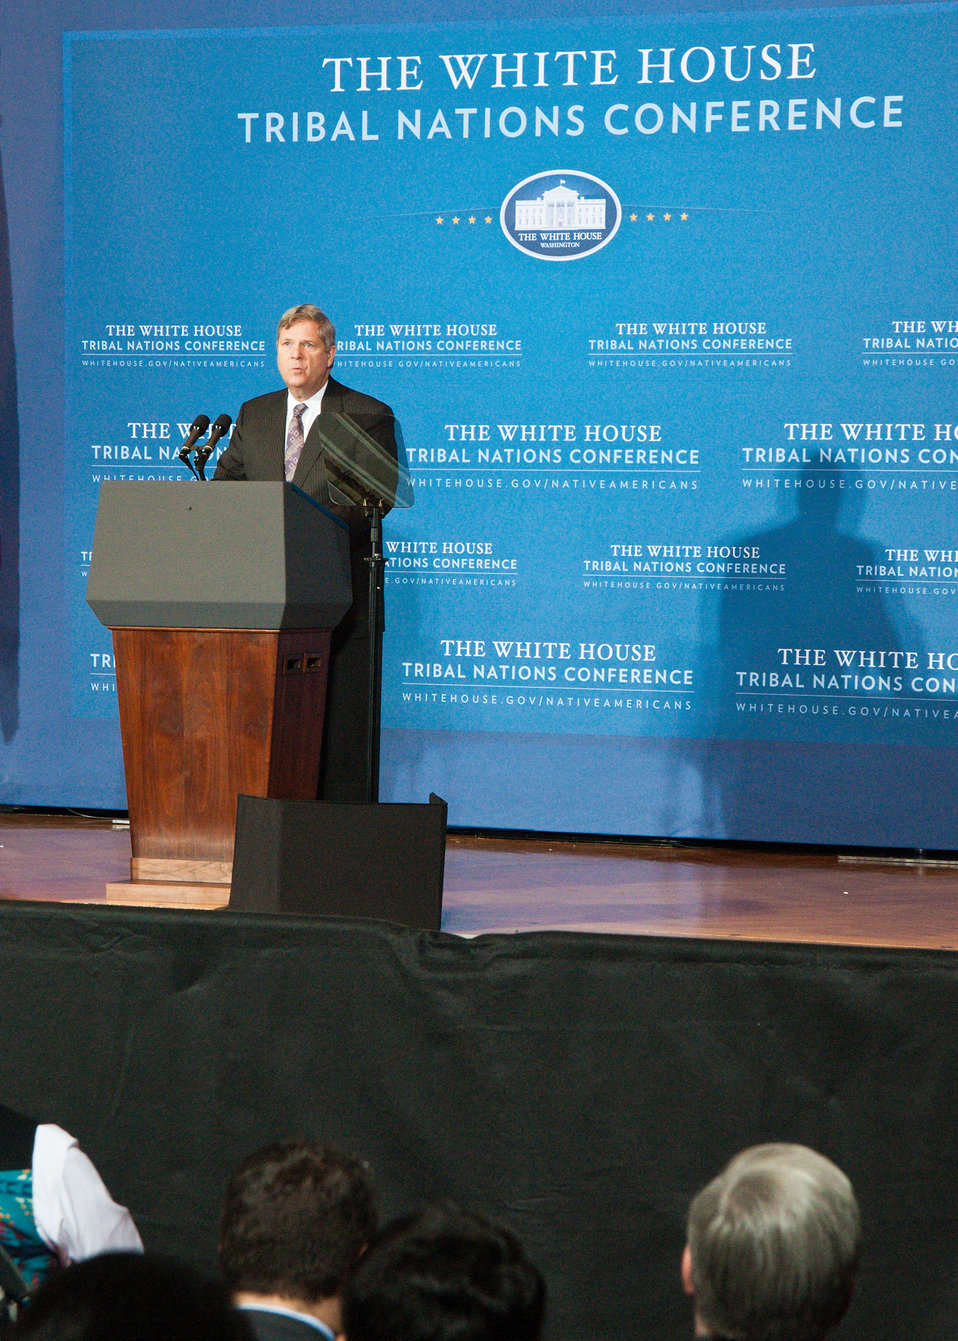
Agriculture Secretary Tom Vilsack speaks at the Fourth Annual White House Tribal Nations Conference at the U.S. Department of Interior in Washington D.C. on Wednesday, Dec. 5, 2012. Cabinet members Interior Secretary Ken Salazar, Agriculture Secretary Tom Vilsack, Education Secretary Arne Duncan, Treasury Deputy Secretary Neal Wolin, Commerce Acting Secretary Rebecca Blank, Health and Human Services Secretary Kathleen Sebelius discussed the gains and progress of the Obama Administration concerning Native American Tribal Nations.